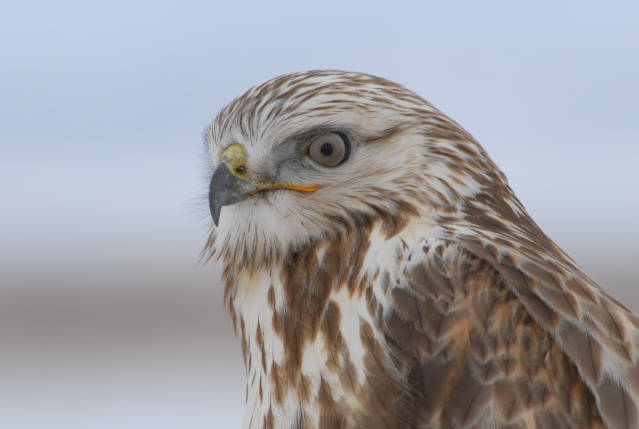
rough-legged hawk